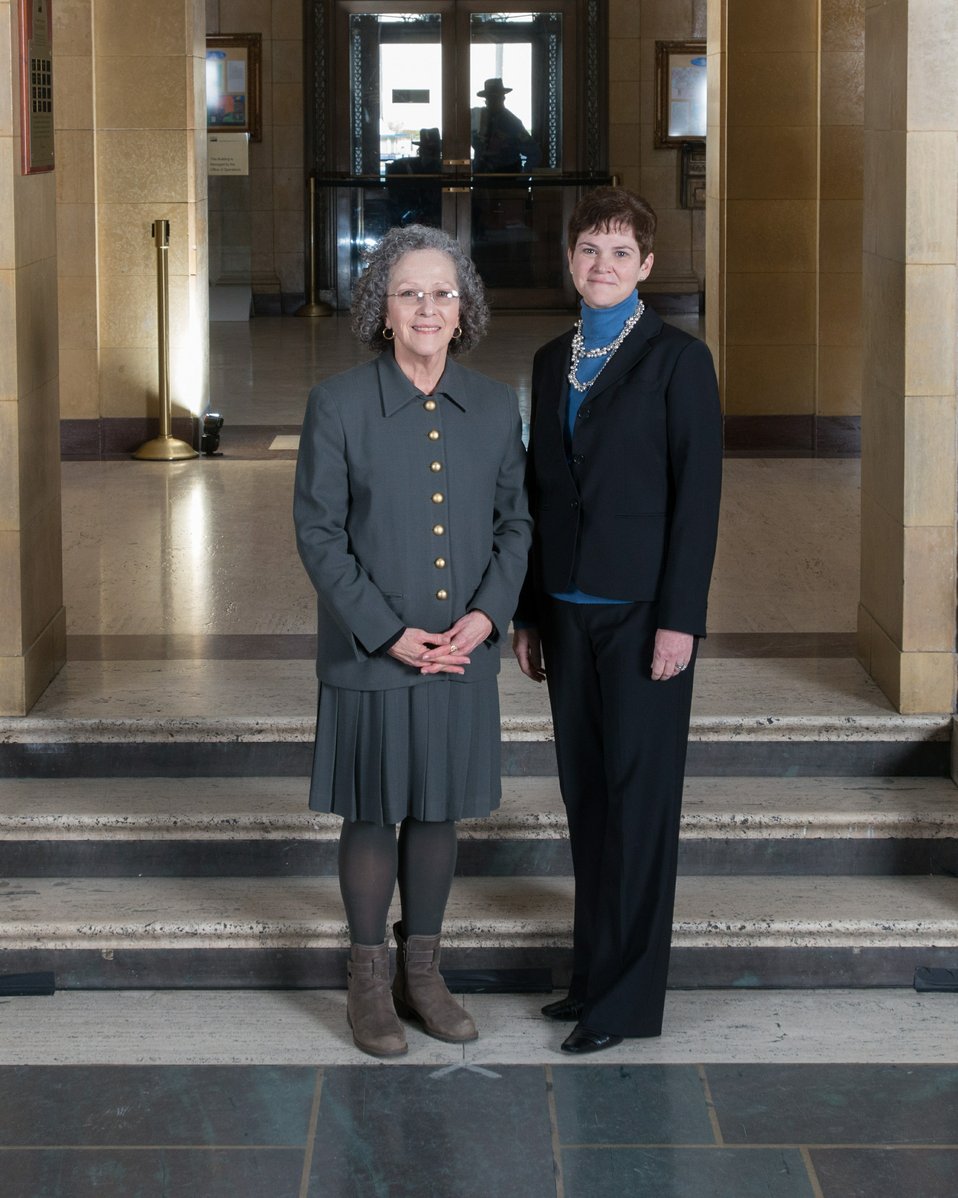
Silver Presidential Volunteer Service Awardee Alice L. Cliburn stands with Agriculture Deputy Secretary Krysta Harden on the patio at the U.S. Department of Agriculture (USDA) in Washington, D.C. on Wednesday, Dec. 11, 2013. The President’s Silver Volunteer Service Award is given to an employee that has served a minimum of 250 ours and a maximum of 499 hours of service.